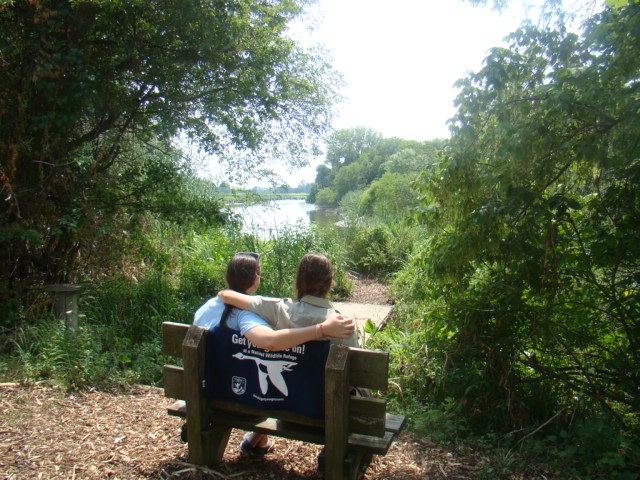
Get Your Goose On!

Looking out into the marsh. GYGO! at John Heinz NWR.